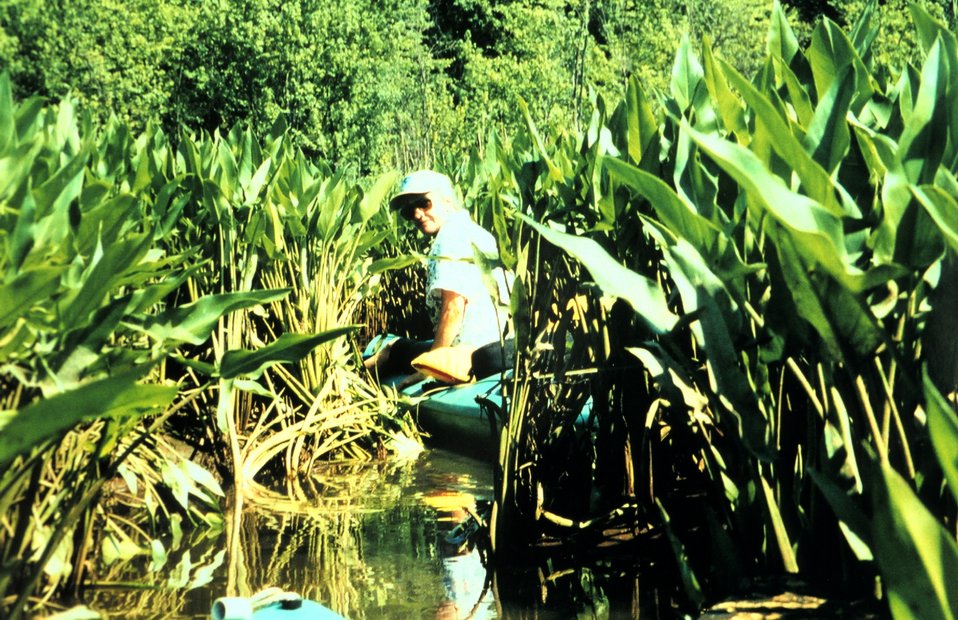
National Weather Service employee Sarah Roy up a creek, but with a paddle. Kayaking in a Patuxent River marsh.